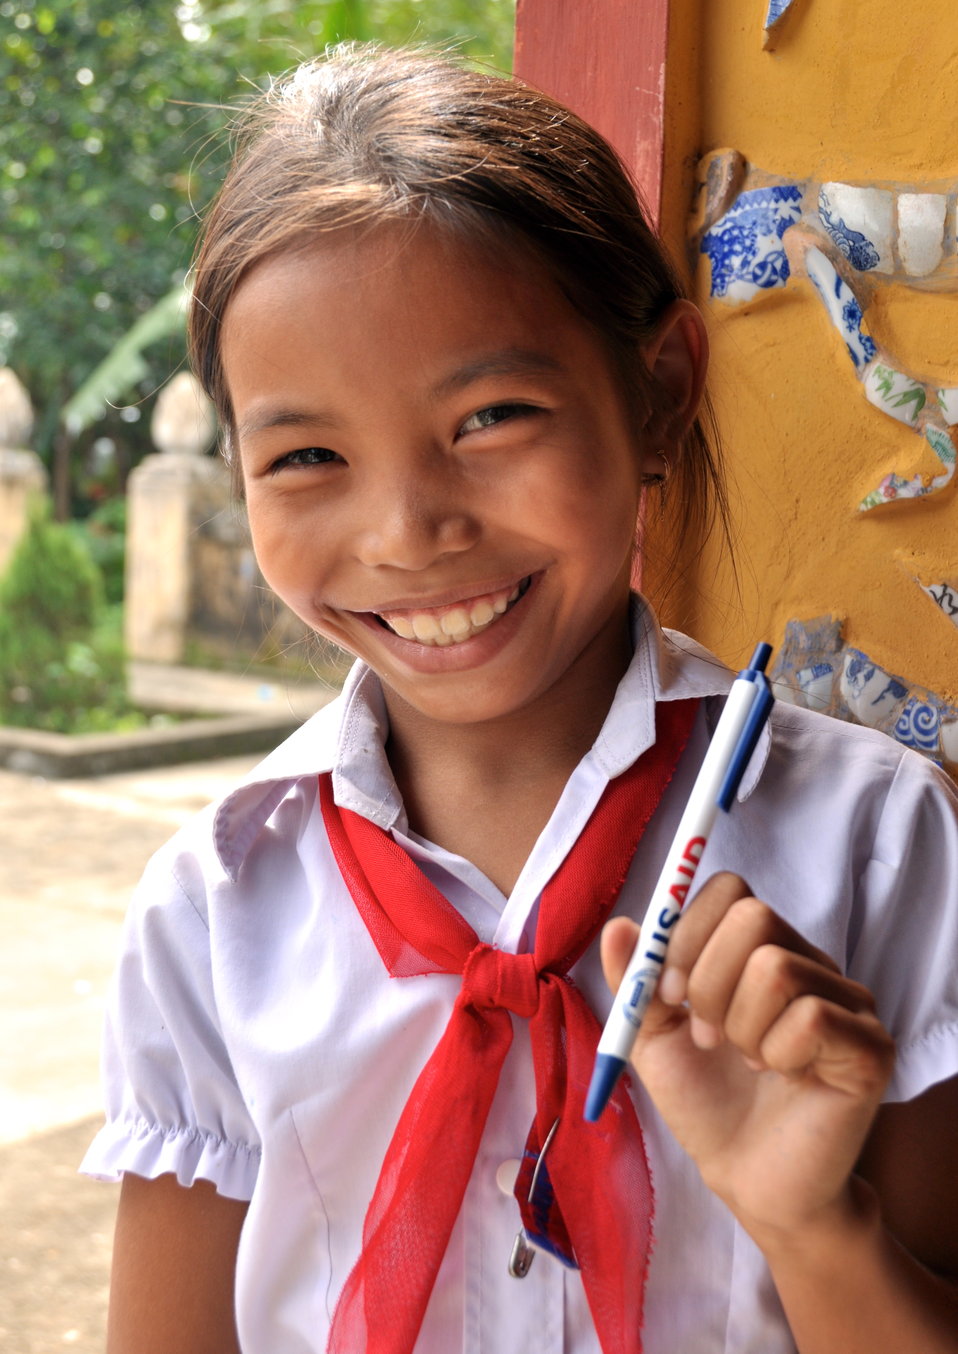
USAID and Save the Children support community evacuation drill and emergency preparedness in central Vietnam

Loc An Commune, Phu Loc District, Thua Thien Hue Province
December 4, 2012, Photo: Richard Nyberg, @USAIDVietnam